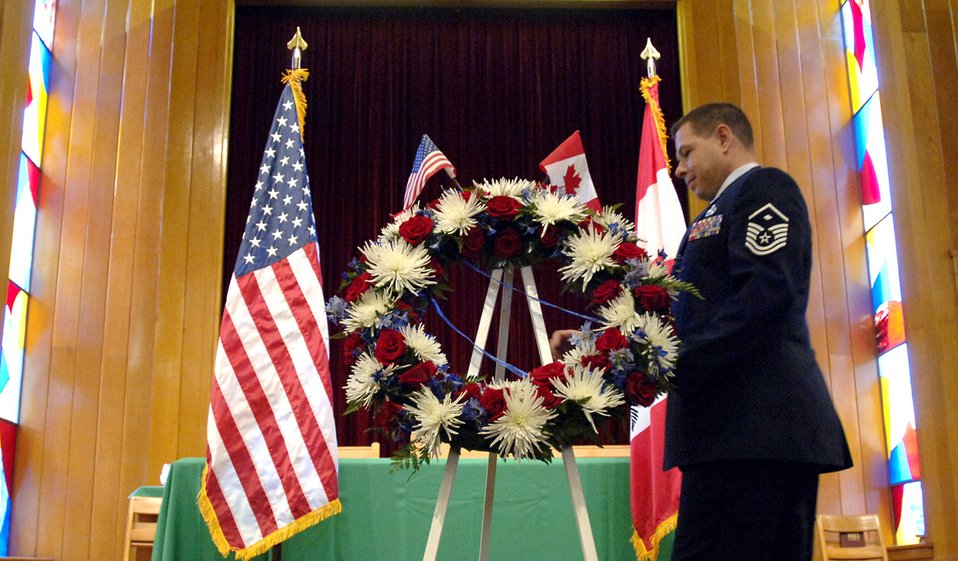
Tyndall ceremony honors 9/11 heroes, victims

Master Sgt. Daniel Rebstock, first sergeant at 1st Air Force North at Tyndall Air Force Base, Fla., prepares a wreath for a special remembrance ceremony Sept. 11 to commemorate the victims and heroes of the 9/11 attacks.